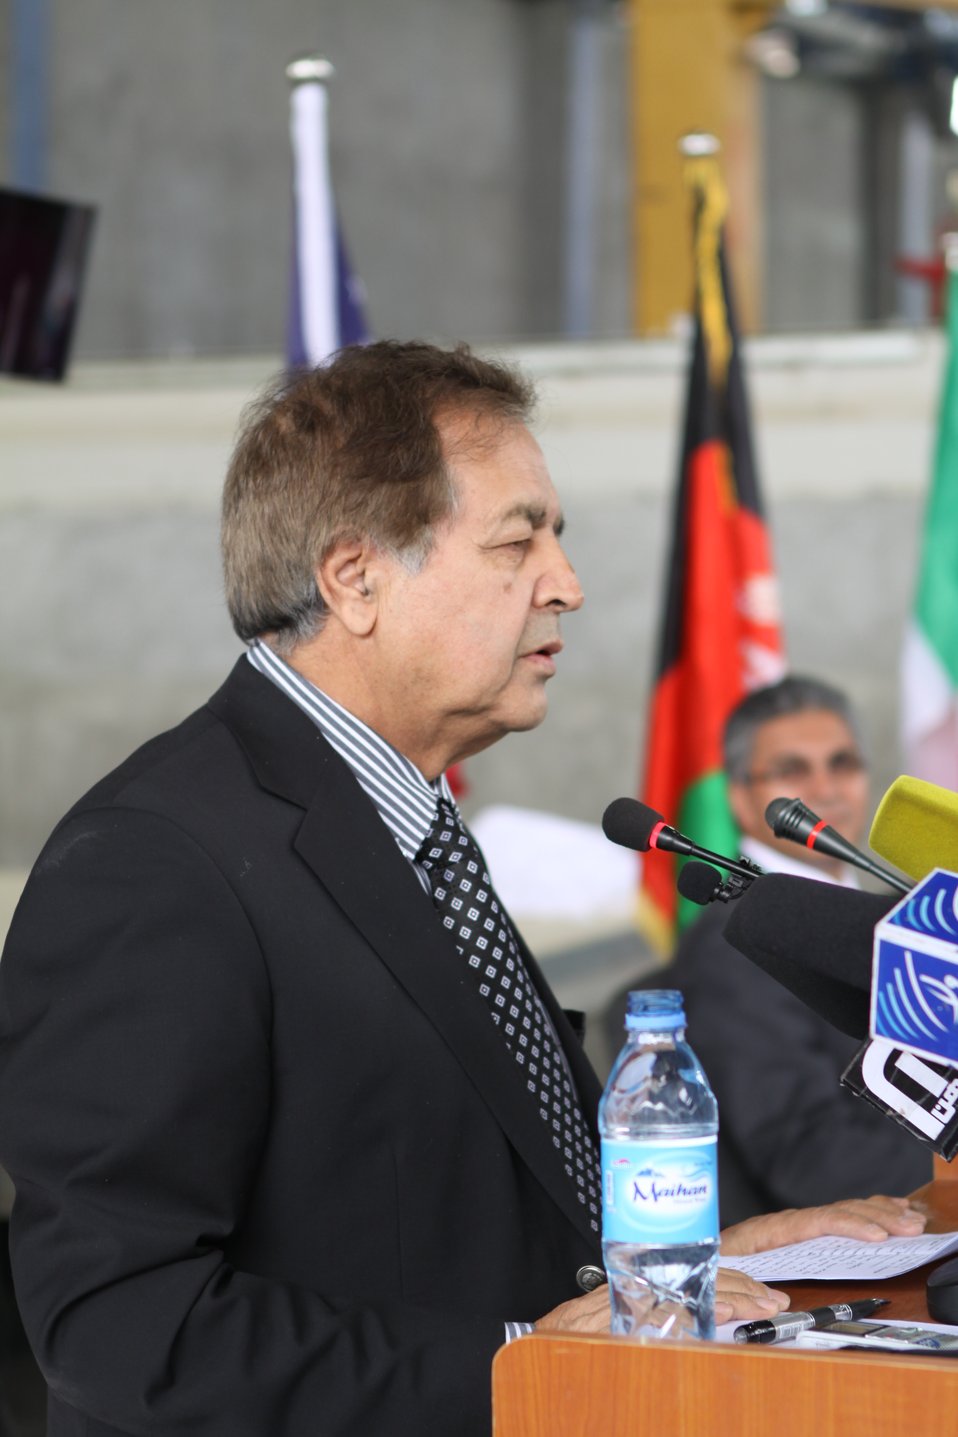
100525 Hirat Marble Conference 276